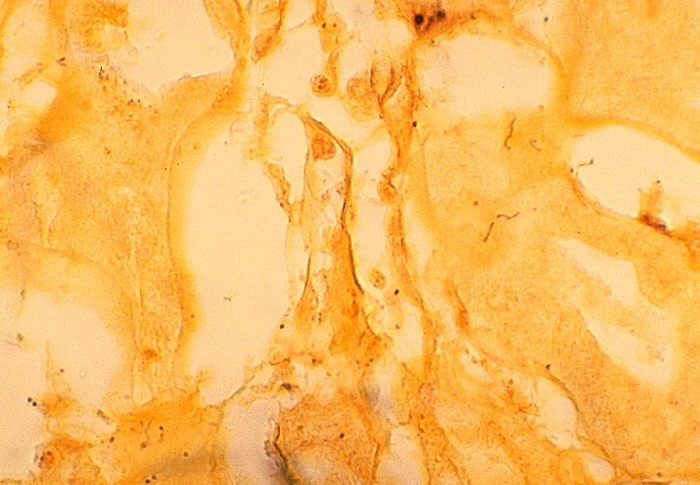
Histopathology of leptospirosis, kidney.